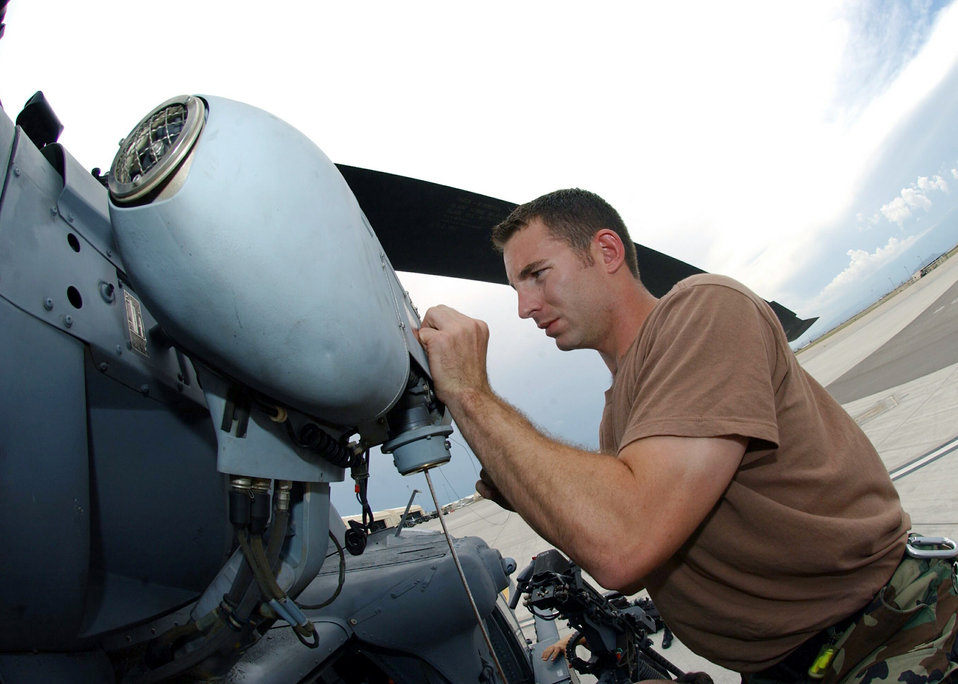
In a fix

DAVIS-MONTHAN AIR FORCE BASE, Ariz. -- Senior Airman Doug McDonnell repairs a hoist on an HH-60 Pave Hawk helicopter here Aug. 16. The hoist is used during rescue missions. Airman McDonnell is assigned to the 563rd Maintenance Squadron.